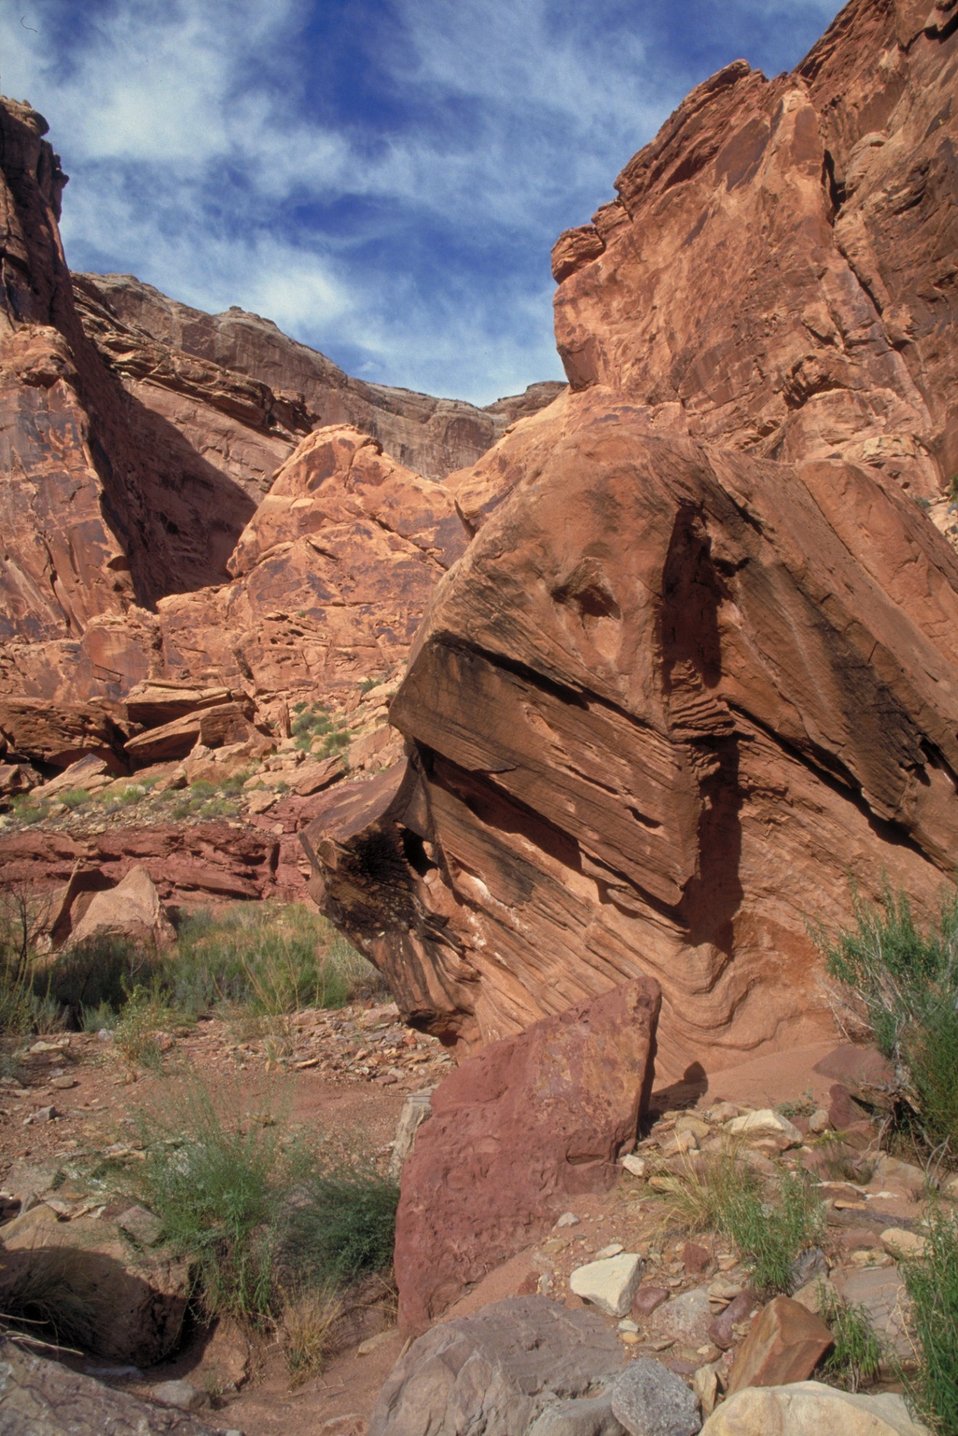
Black Dragon Wash near Green River, Utah.